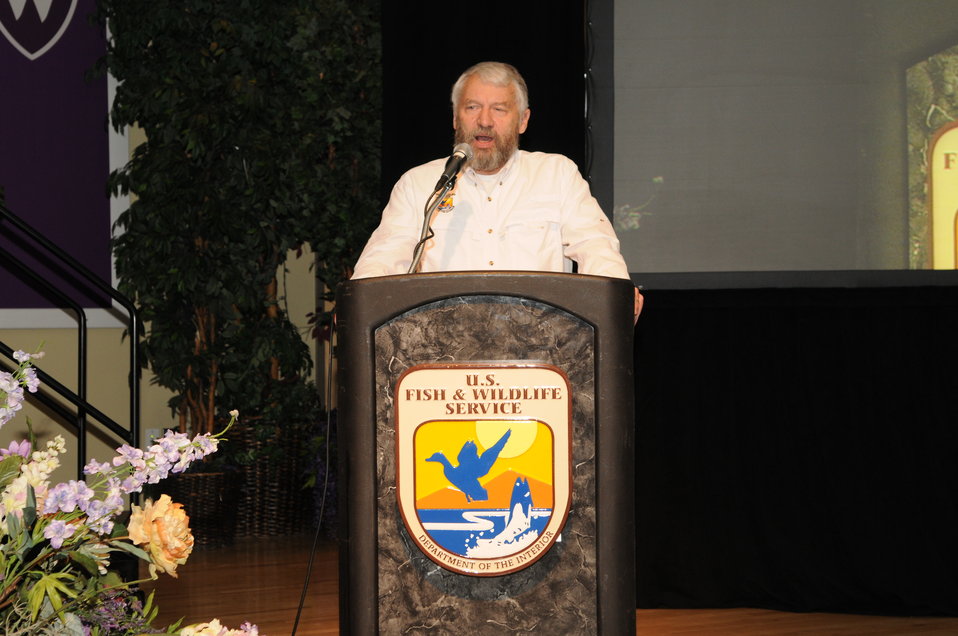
Day 2 Opening Remarks

The U.S. Fish & Wildlife Service sponsored the 2012 Federal Duck Stamp Art Contest September 28 and 29 in Ogden, Utah, at Weber State University. A panel of five judges was responsible for choosing the art work used to design the 2013-2014 Migratory Bird Hunting and Conservation Stamp.